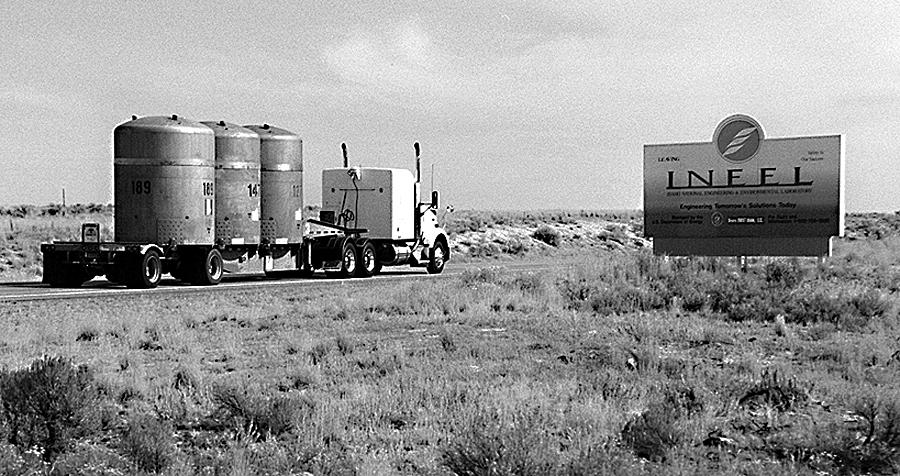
FINAL SHIPMENT OF TRANSURANIC WASTE LEAVING INL FOR DOE'S WASTE ISOLATION PILOT PLANT.

REMOVAL OF TRANSURANIC WASTE FROM INL WAS A COMMITMENT IN THE COURT ORDERED IDAHO SETTLEMENT AGREEMENT SIGNED BY DOE, THE STATE OF IDAHO, AND THE U.S. NAVY IN 1995. THE FIRST SHIPMENT OF TRANSURANIC WASTE TO WIPP LEFT INL ON APRIL 27, 1999 AND THE LAST, THE 563RD, ON OCTOBER 24, 2002. THE TOTAL AMOUNT OF TRANSURANIC WASTE SHIPPED WAS 3,101.1 CUBIC METERS IN 14,909 FIFTY FIVE-GALLON DRUMS.